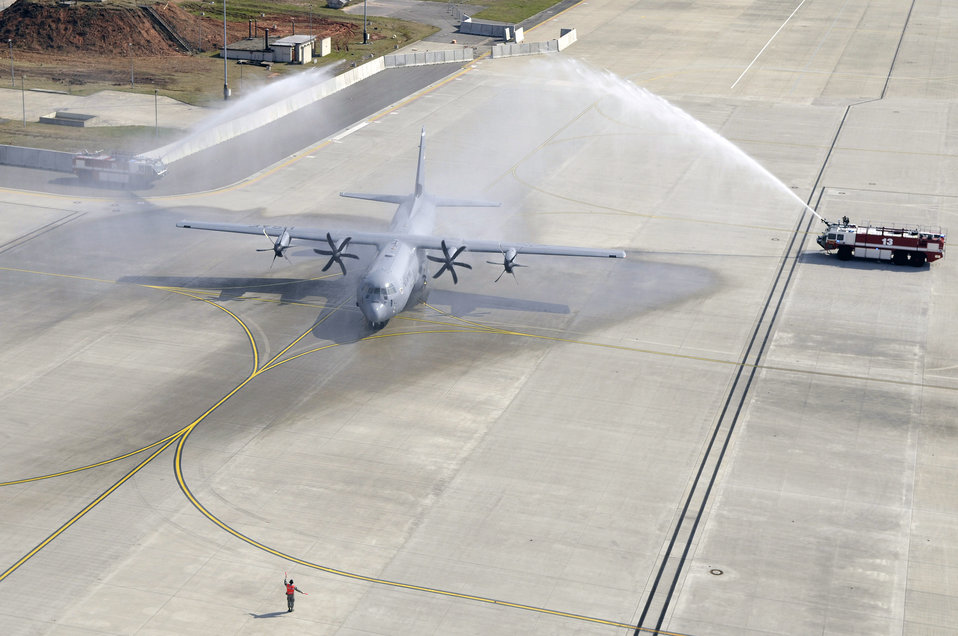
Ramstein welcomes new J-model C-130

A C-130J Super Hercules taxis through water April 7 on the flightline of Ramstein Air Base, Germany, after landing at the base for the first time. The J-model arrived during a ceremony that heralded a new era in operations for the 86th Airlift Wing. This aircraft is the first of 14 J-models that are scheduled to arrive over the next 12 months to replace the older E-model Hercules stationed there.